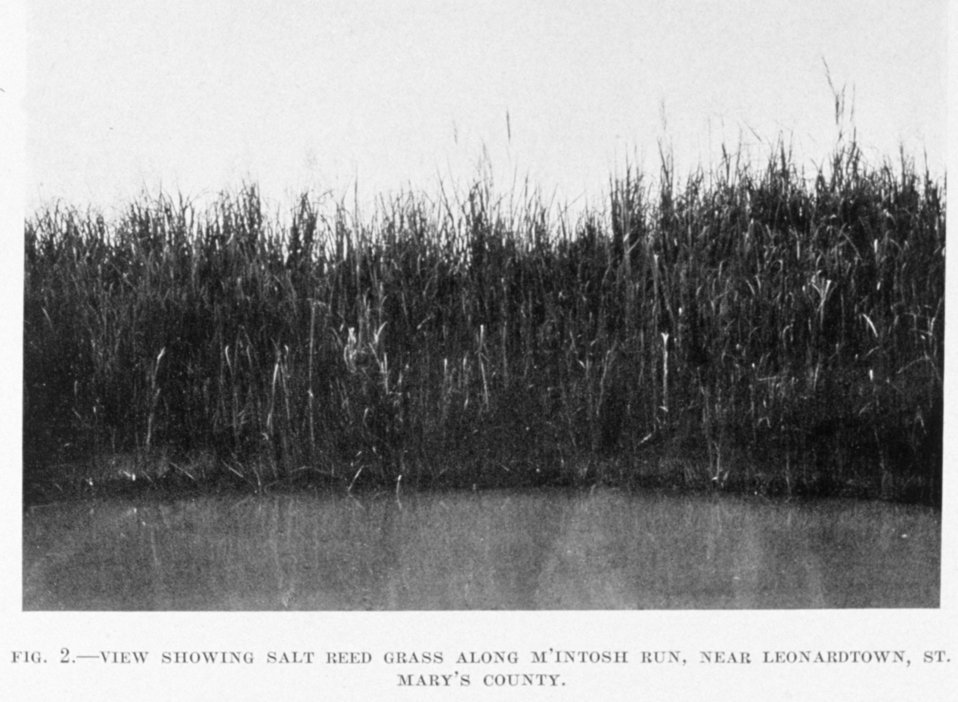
Salt reed grass near M'Intosh Run, near Leonardtown, St. Mary's County.